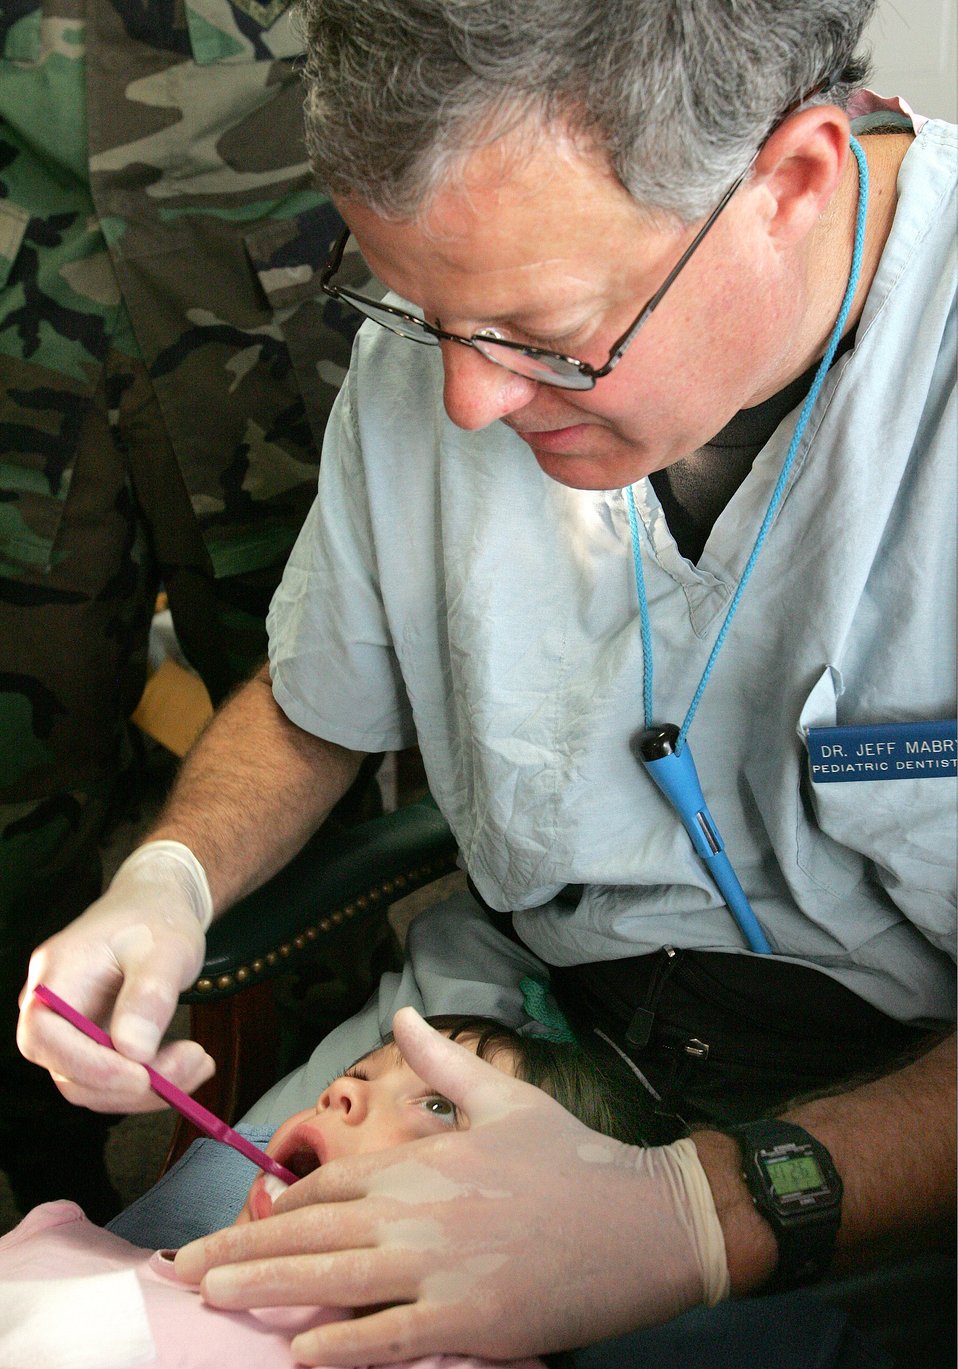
Good habits start early

Madison Bellon opens wide while Col. (Dr.) Jeffery Mabry brushes her teeth at the Skylark Community Center at Lackland Air Force Base, Texas, on Wednesday, May 10, 2006. The pediatric dental department at Lackland provides drop-in dental screenings as part of their pediatric dental training program. Colonel Mabry is director of pediatric dentistry with the 59th Dental Squadron.